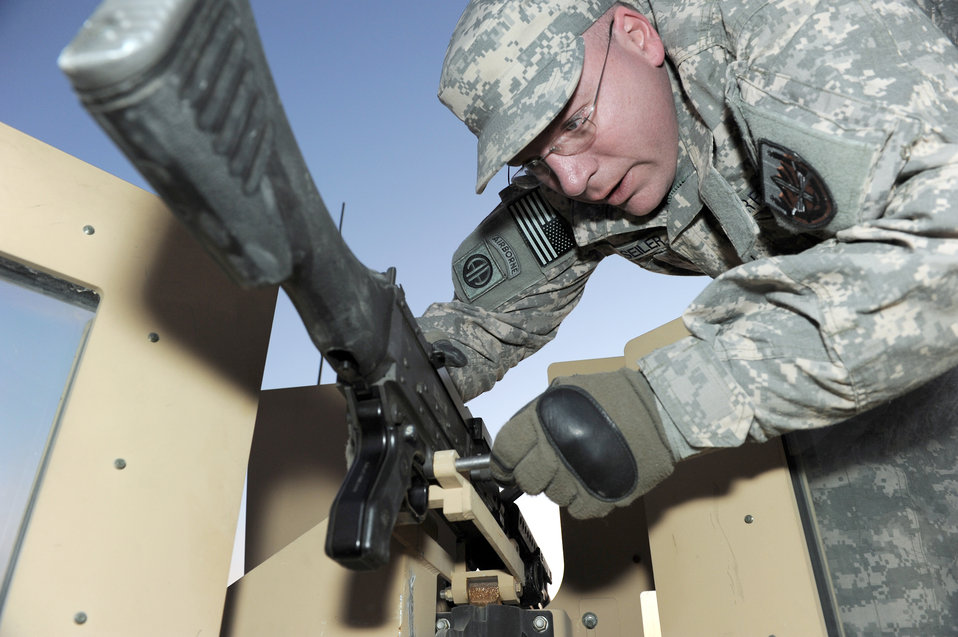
755th Anniversary

Master Sgt. Patrick Seiler installs a crew-served weapon during convoy preparations Jan. 19, 2010, at Bagram Air Force Base, Afghanistan. Sergeant Seiler is a resource advisor/convoy driver assigned to the Combined Joint Task Force 82 Regional Support Team East and deployed from Ellsworth Air Force Base, S.D.